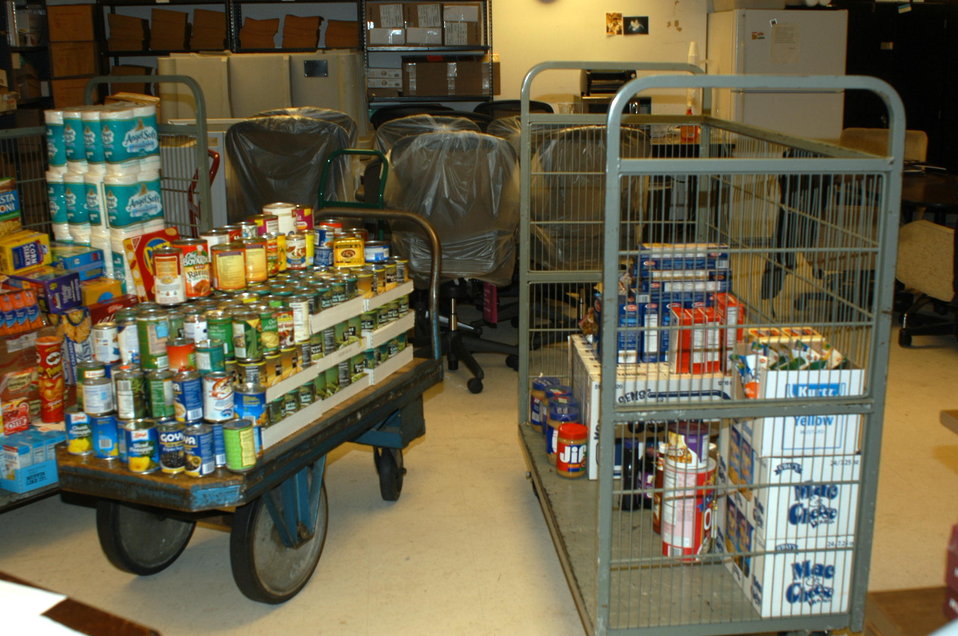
Sierra Exif JPEG